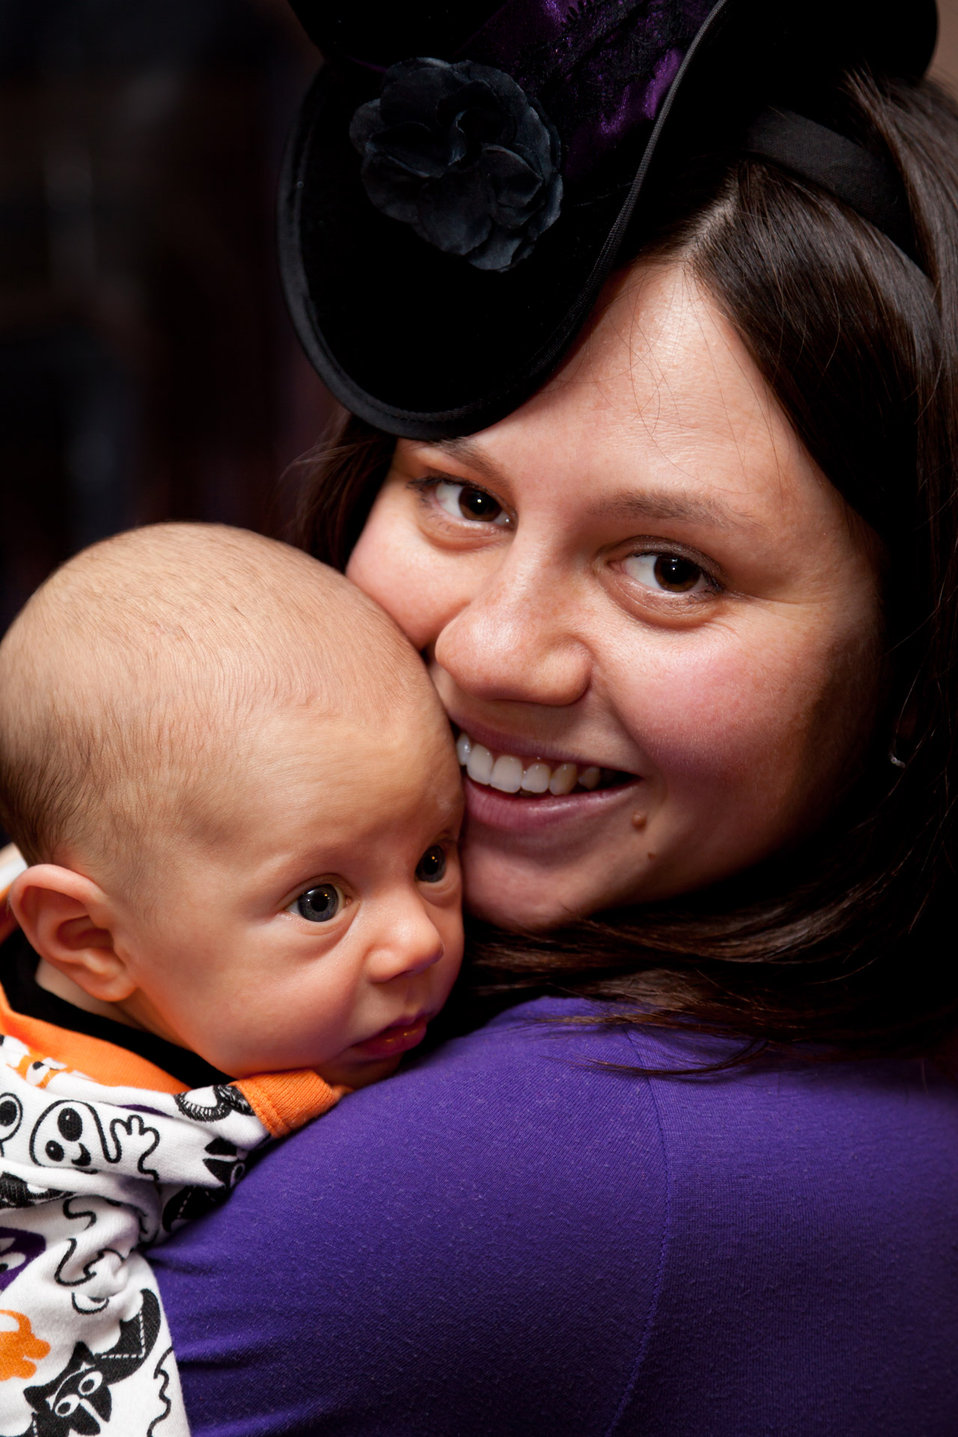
Halloween mom

Halloween mommy with a baby.